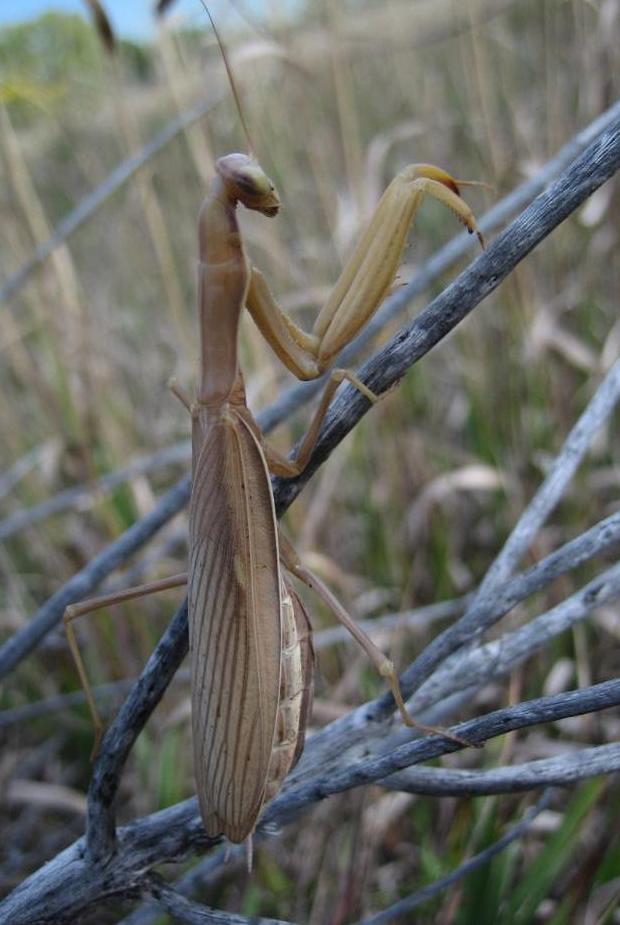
Praying Mantis